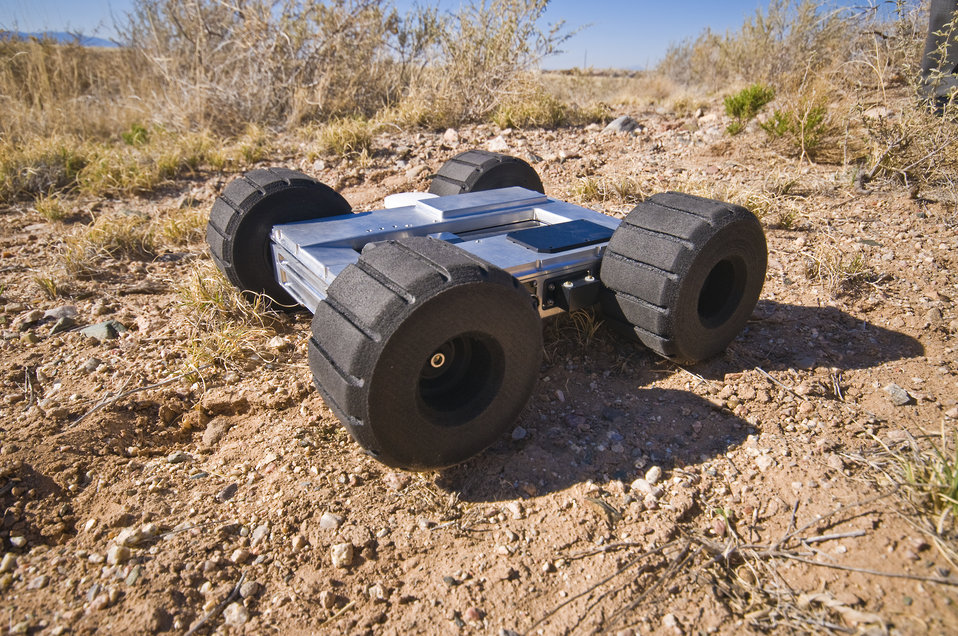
The four-wheeled hopper robots will navigate autonomously by wheel and jump with one mighty let onto or over obstacles of more than 25 feet.

The Precision Urban Hopper is funded by the Defense Advanced Research Projects Agency. As part of the DARPA project, Sandia developed the shoebox-sixed, GPS guided, unmanned ground robots. The overall goal of the decrease the number of casualties in combat. In addition, to providing military assistance, the hopping capabilities of the robots could be used in law enforcement, homeland security, and search and rescue applications in challenging terrain and in planetary exploration.